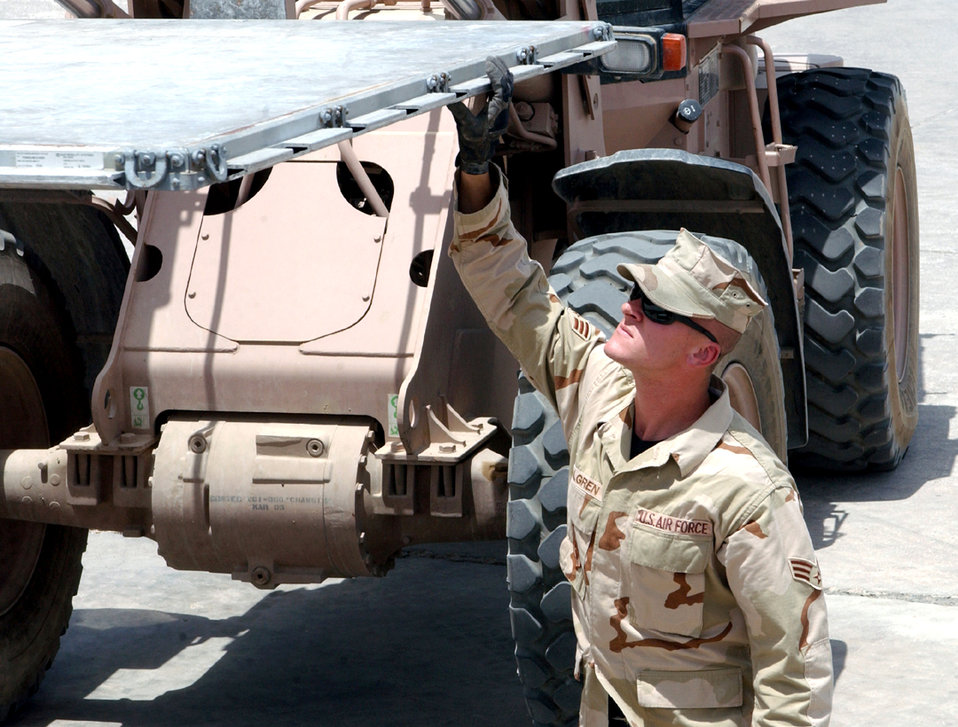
Logisticians track down $1 million in pallets

Senior Airman Randy Walgren checks a pallet for serviceability before stacking it for shipment at Ali Base, Iraq, on Wednesday, June 21. Airman Walgren and a team of 10 logisticians tracked down and returned to service more than $1 million of pallets in one month.